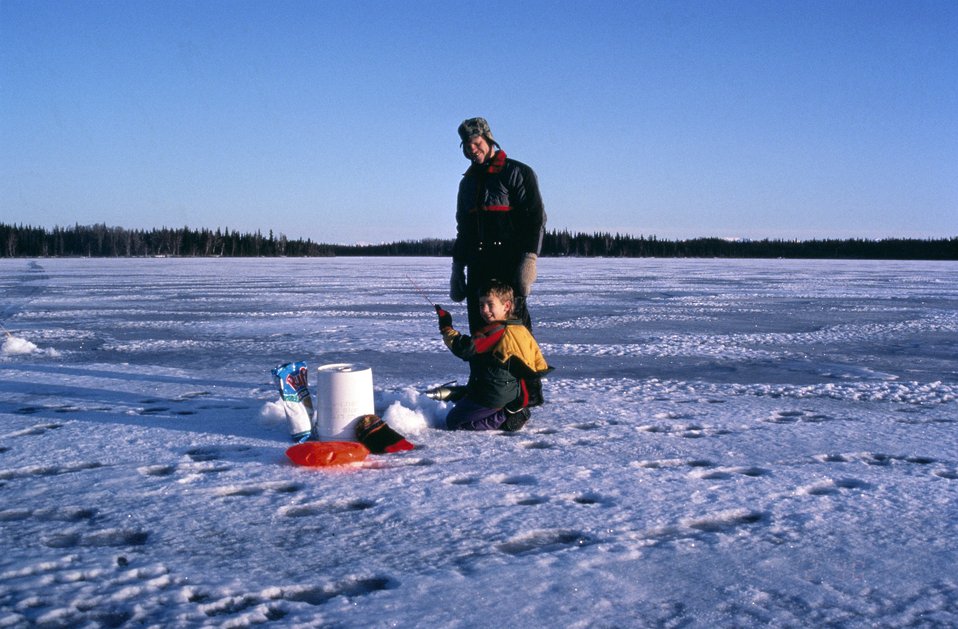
Ice fishing, Kenai NWR

A hardy pair prepare to try their hand at ice fishing at Kenai National Wildlife Refuge in Alaska. (USFWS)